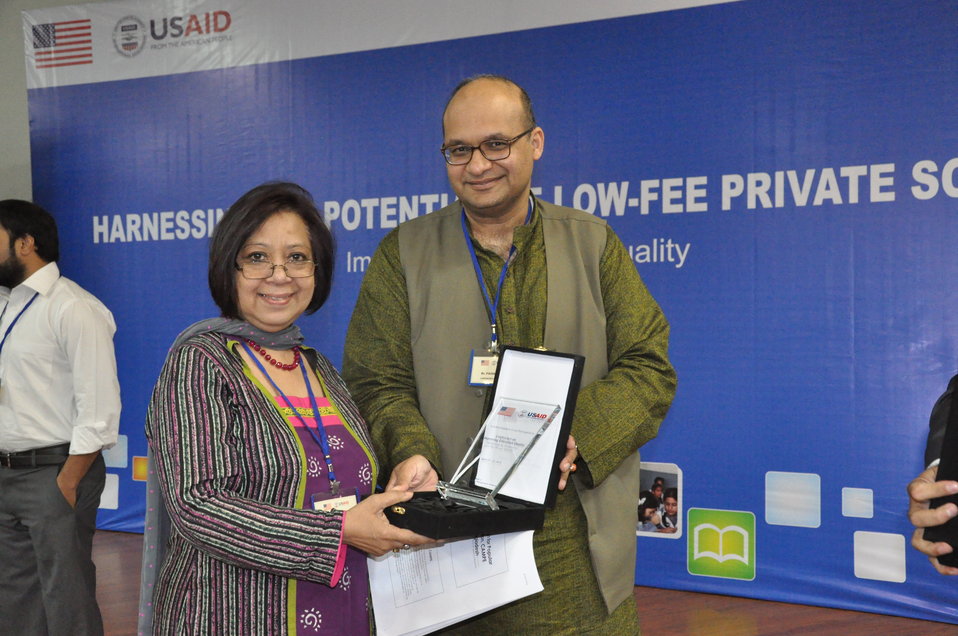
Dr. Faisal Bari, from LUMS, presenting a shield to Tasneem Athar from Bangladesh